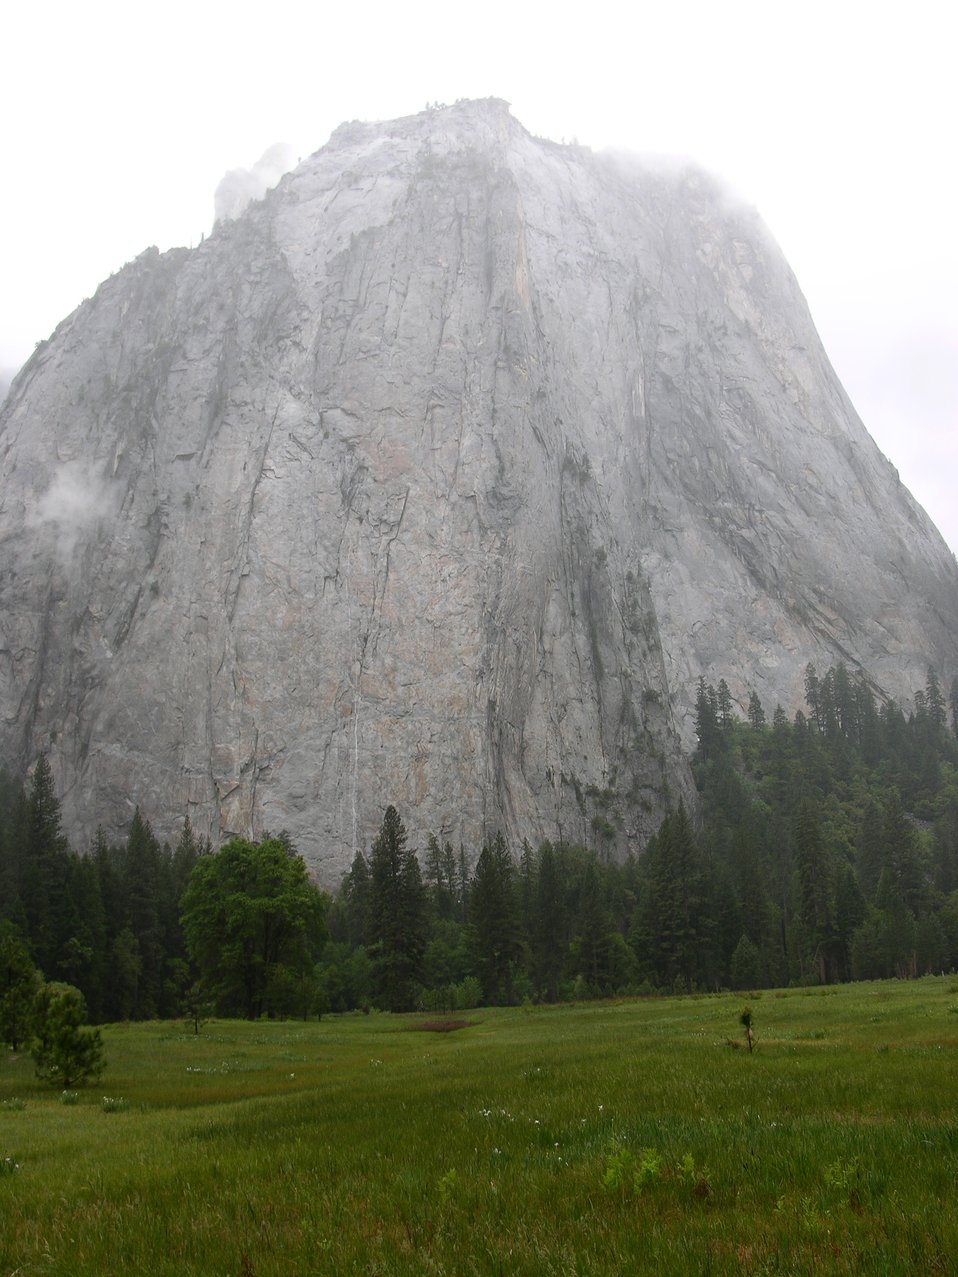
El Capitan rising above a Yosemite meadow.